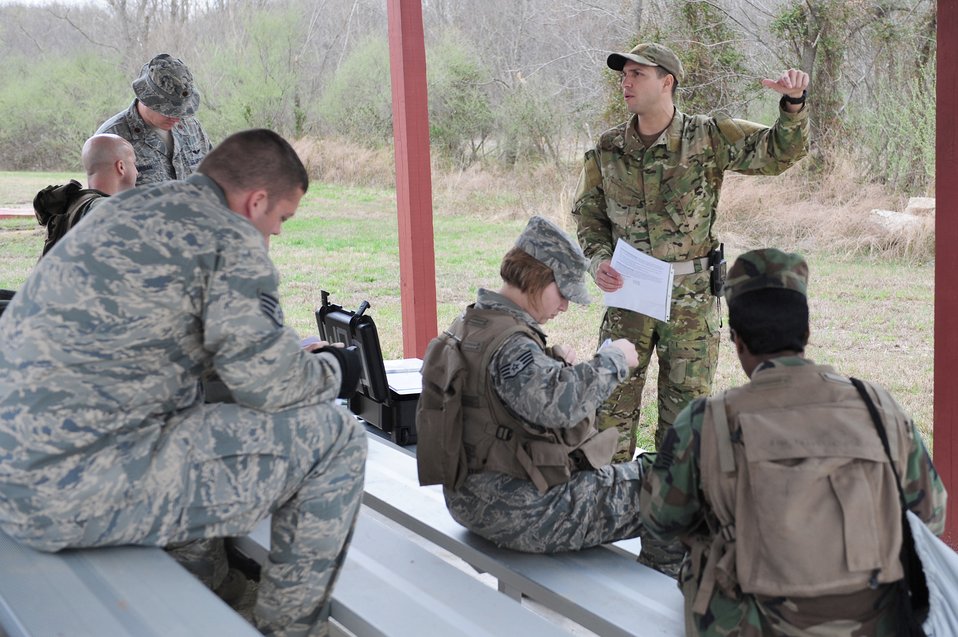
Combat survival training

Tech. Sgt. Robert Graham gives a safety briefing March 22, 2011, during combat survival training at the Illinois Army National Guard's Sparta Training Area in Sparta, Ill. Sergeant Graham is a survival, evasion, resistance and escape specialist assigned to the 375th Operations Support Squadron at Scott Air Force Base, Ill.